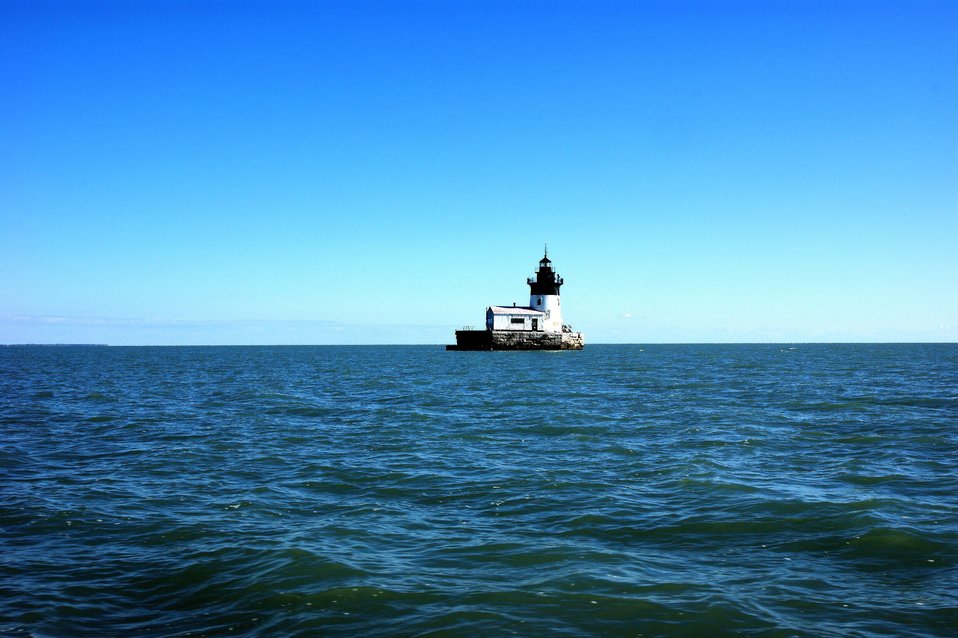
Detroit River Lighthouse south of Detroit River on Lake Erie.